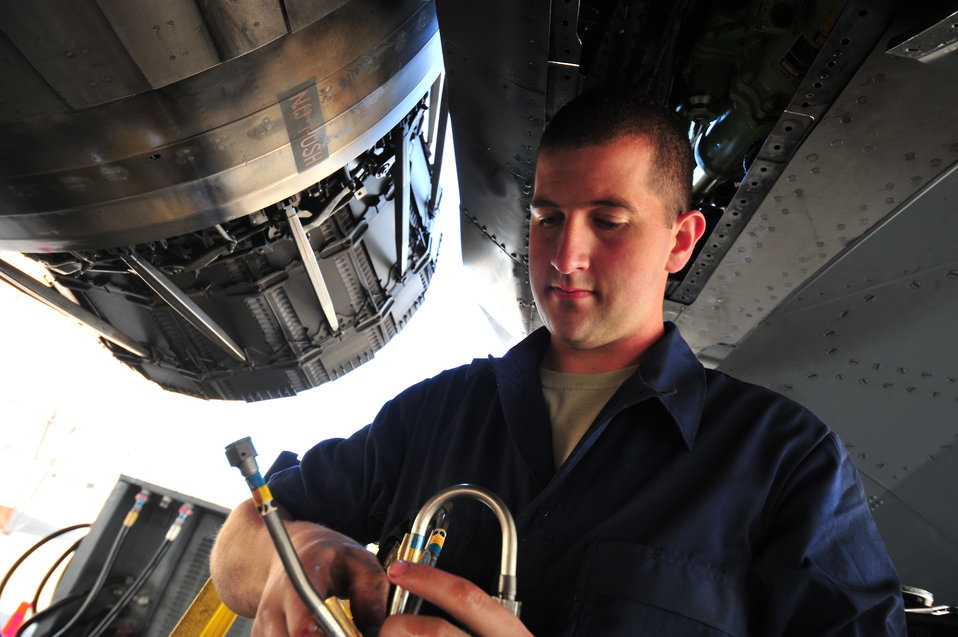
Mustang Mayhem

Senior Airman Adam Johnson inspects hydraulic lines before installing them April 13, 2012, at at Seymour Johnson Air Force Base, N.C. Airmen from the 4th Fighter Wing work together to prepare for Mustang Mayhem, a training mission to launch 70 F-15E Strike Eagles that will destroy more than 1,000 targets on bombing ranges across North Carolina to pay homage to their history in World War II. Johnson is an F-15E crew chief assigned to the 4th Aircraft Maintenance Squadron.